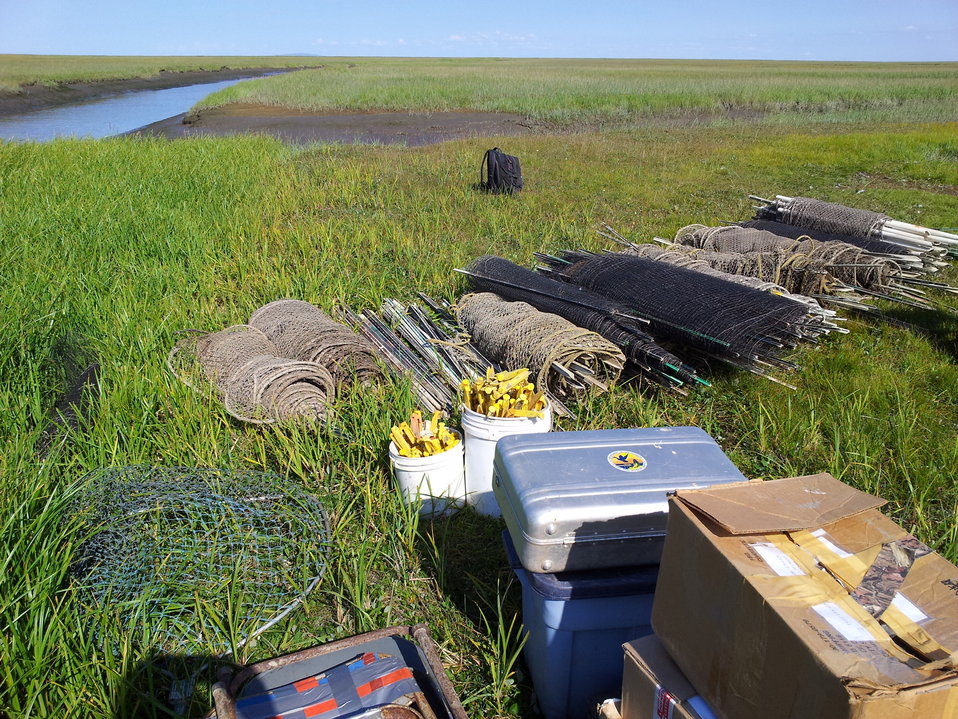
What you need to capture a few hundred Cackling Geese

There are times when field camps have a lot of gear to manage.

This is gear that we use for capturing cackling geese it includes lead net lines, netting for the capture pot, stakes to secure nets to the tundra, banding kit, etc.

USFWS Yukon Delta NWR